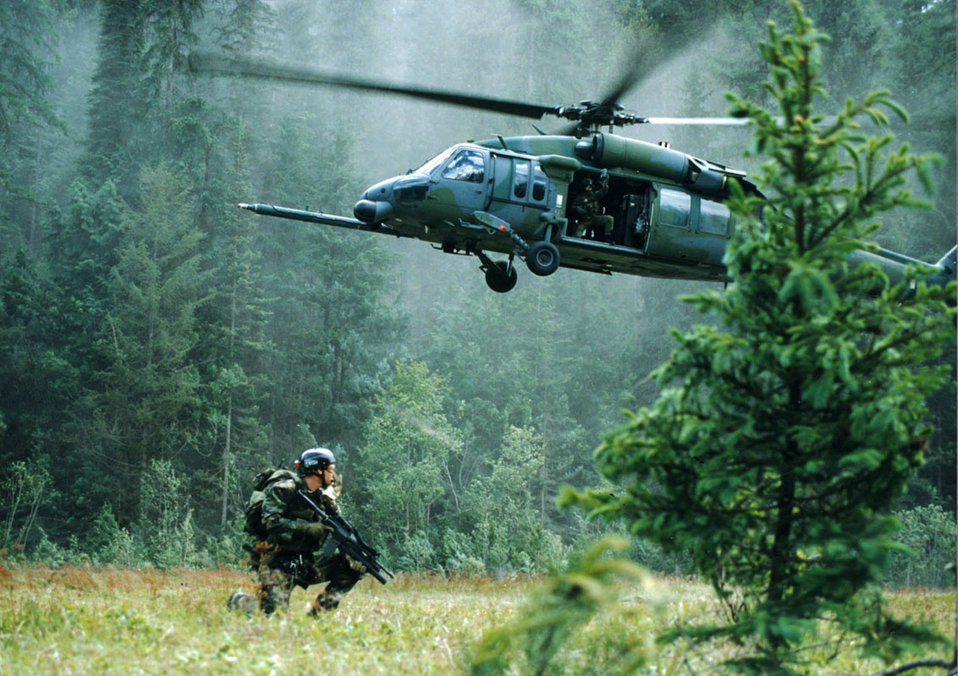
HH-60G Pave Hawk

FILE PHOTO -- The primary mission of the HH-60G Pave Hawk helicopter is to conduct day or night operations into hostile environments to recover downed aircrew or other isolated personnel during war. Because of its versatility, the HH-60G is also tasked to perform military operations other than war. These tasks include civil search and rescue, emergency aeromedical evacuation, disaster relief, international aid, counterdrug activities and NASA space shuttle support.